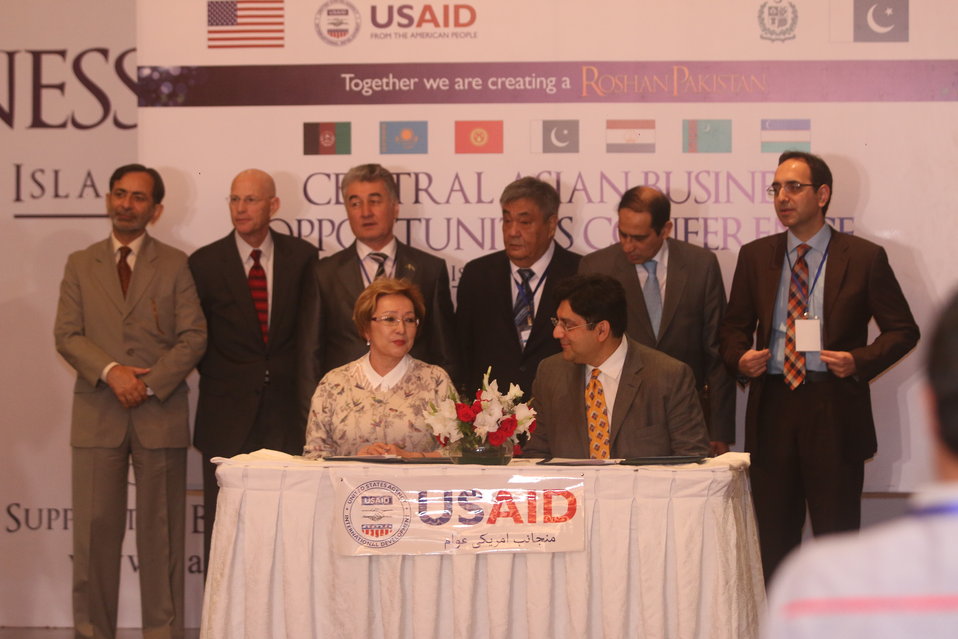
CABOC 2014